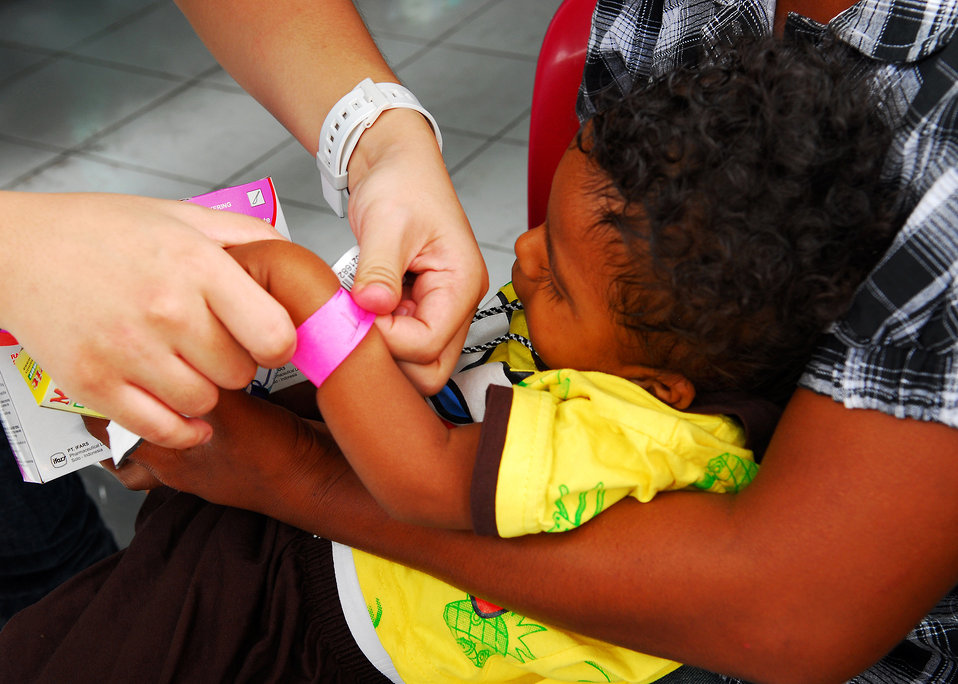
A child’s bracelet is removed after receiving medication during a medical civic action program in Sulamadaha, Indonesia, on July 20, 2010. The Military Sealift Command hospital ship USNS Mercy (T-AH 19) is in the North Maluku Islands conducting Pacific Partnership 2010, the fifth in a series of annual U.S. Pacific Fleet endeavors conducted in Indonesia as a disaster relief exercise aimed at strengthening regional partnerships.